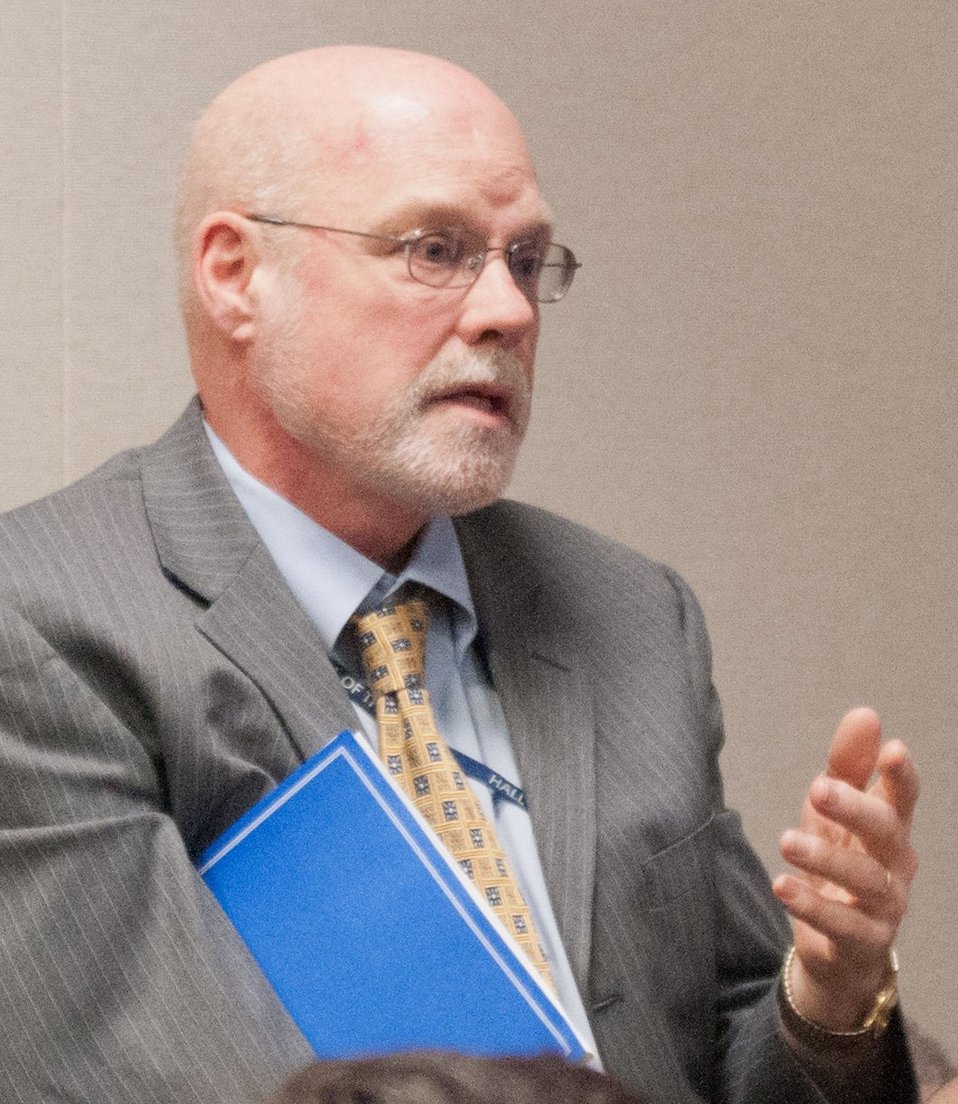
A stakeholder asks a question of Agriculture Secretary Tom Vilsack during a briefing and questions about the Agriculture FY2013 budget on Monday, February 13, 2012, in Washington, D.C.